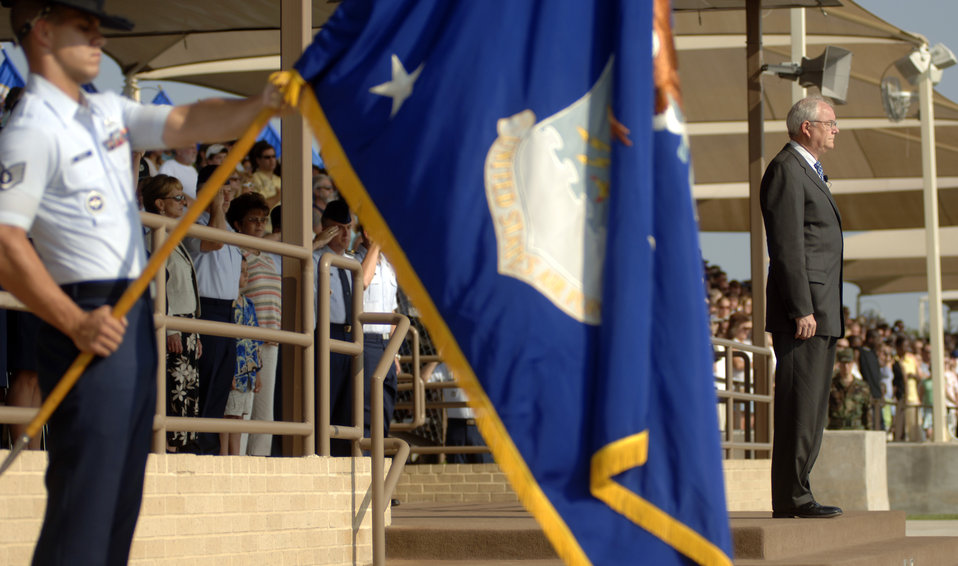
Secretary Wynne expects Airmen to continue to excel

Secretary of the Air Force Michael W. Wynne presides over the basic military training parade as training flights march by on graduation day at Lackland Air Force Base, Texas, on Friday, June 2, 2006. Secretary Wynne was in San Antonio visiting various military installations and training sites.